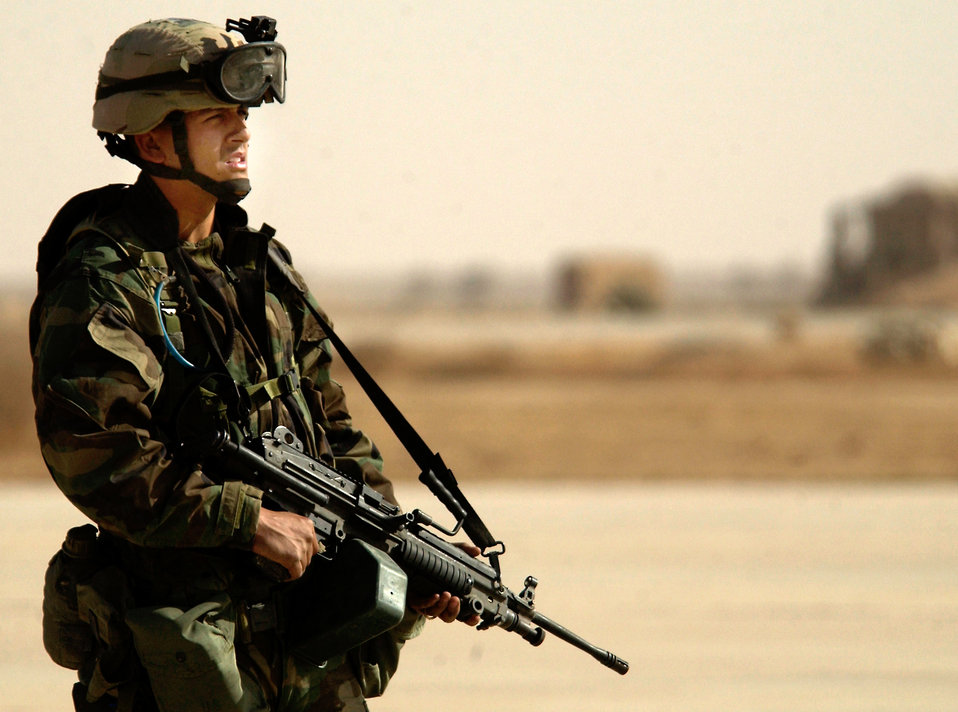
Sentry duty

OPERATION IRAQI FREEDOM -- A security forces member guards an aircraft April 2, at an airbase in southern Iraq.